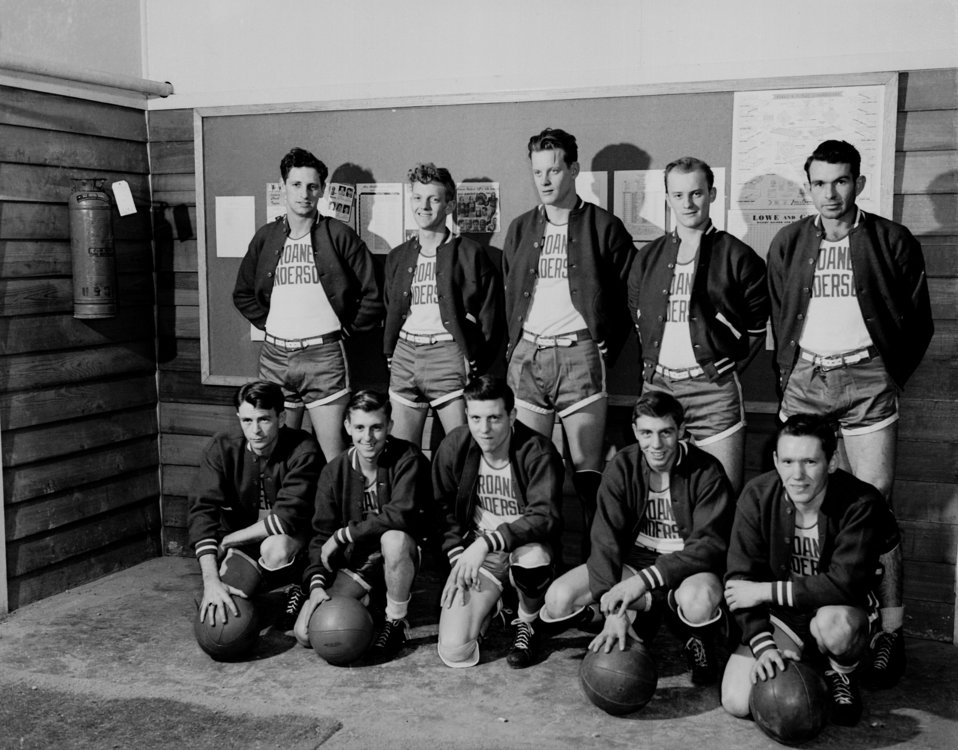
Roan Anderson Basketball Team Oak Ridge

3221-2 DOE photo by Ed Westcott Oak Ridge Tennessee 1-3-1947